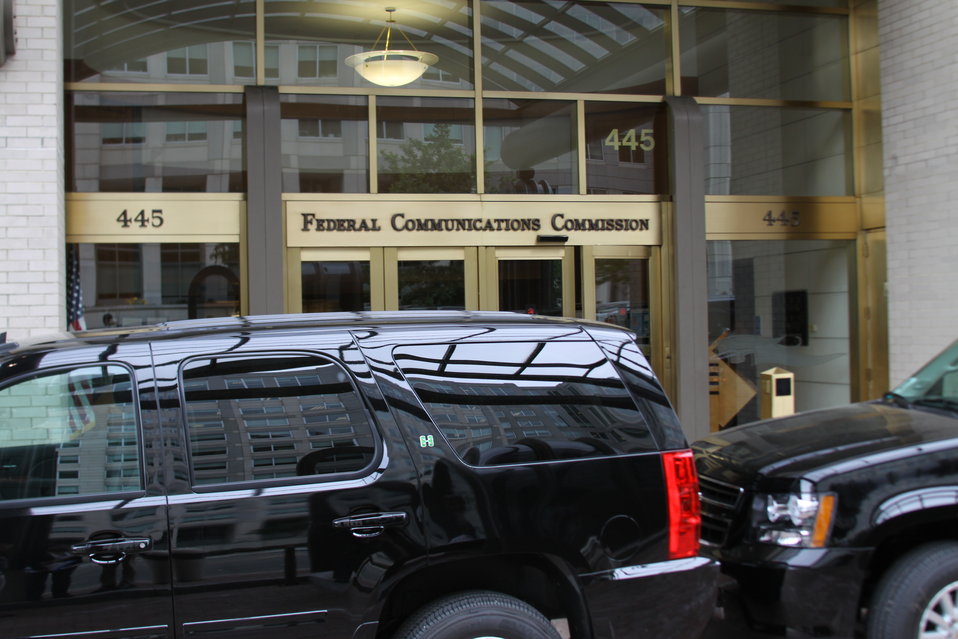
Tahoes 014